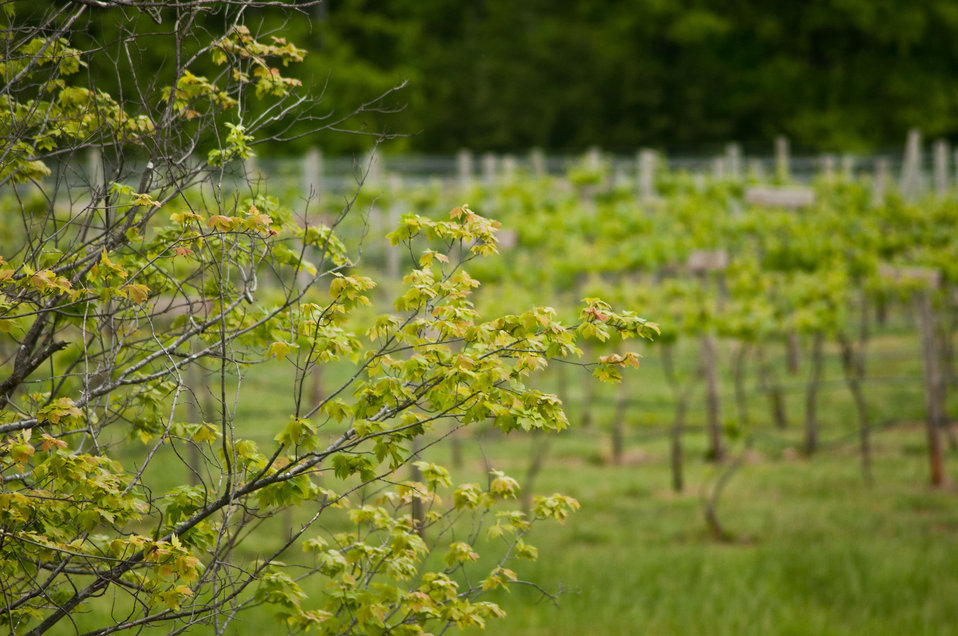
Cooper Vineyards in Louisa, VA, is the first winery on the East Coast and the second in the country to be awarded the fourth and highest, Platinum certification by Leadership in Energy and Environmental Design (LEED).
From a Virginia Wine Board Marketing Office press release, “The process of building a LEED platinum certified building was initially more expensive and arduous than co-owners, Jacque Hogge, MD and Geoffrey Cooper, MD expected, but they were able to get financial assistance from the United States Department of Agriculture. “Know that there are grants available to help with the costs of sustainable building projects,” Hogge advises to other potential green wineries. Cooper Vineyards received 2 of the 3 USDA (U.S. Department of Agriculture Rural Development (RD) Rural Energy Financing program) grants awarded in Virginia in 2010 to help with the expenses of their construction.”
Rural Energy Financing program focuses on loan guarantees, loans and grants to agricultural producers, businesses, cooperatives and rural residents for renewable energy systems and to make energy efficiency improvements.
The tasting room and building collects rainwater from the roof; uses low flow water fixtures to reduce usage by 40%; utilizes structurally insulated panels for the roof and walls; heats and cools the entire building using a geothermal system that includes pipes that are embedded in the parking lot; low-voltage LED lighting with daylight and occupancy sensors provide ample light when it is needed; a solar panel array provides more than 15% of the energy needs for the building, and much of the construction materials are from local and recycled material sources. For more information about USDA please go to www.usda.gov, Rural Development and Rural Energy Financing. LEED was developed by the U.S. Green Building Council (USGBC) is a 501 c3 non-profit organization committed to a prosperous and sustainable future for our nation through cost-efficient and energy-saving green buildings.